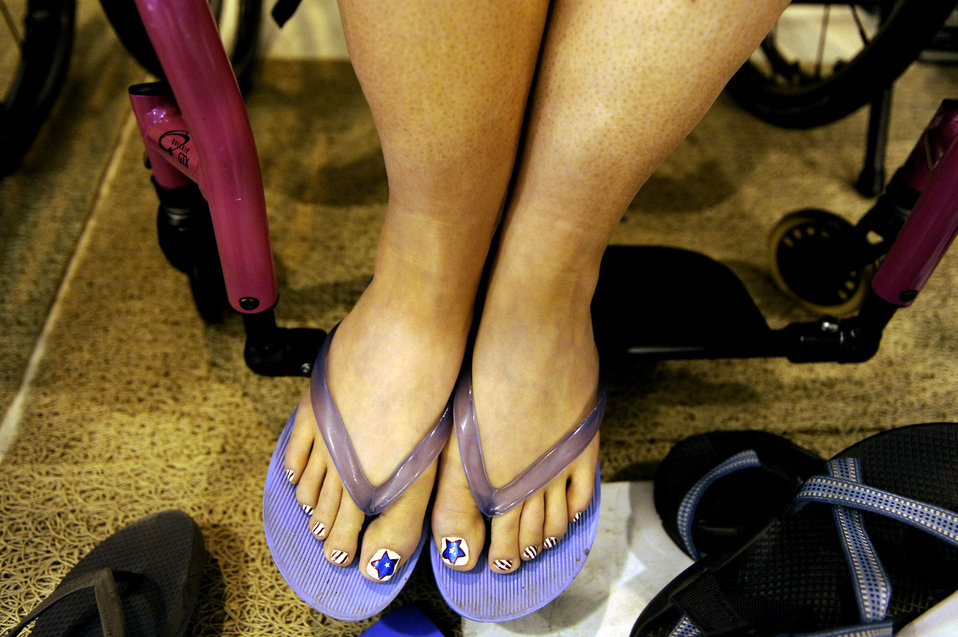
Former Airman competes in veterans Wheelchair Games

Terri Fuda gets into the spirit of the games with her painted toe nails as she waits to compete in the swimming competition held at the Whitworth University swimming pool during the 29th National Veterans Wheelchair Games July 15 in Spokane, Wash. Ms. Fuda is an Air Force veteran from Gillespie, Ill.